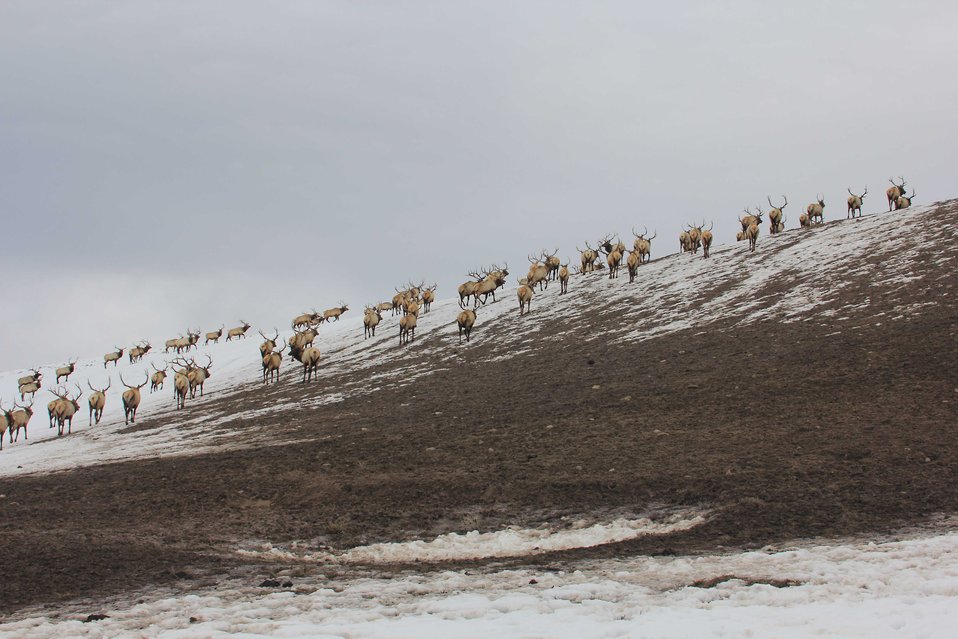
Moving to Higher Ground

When spring-like conditions move in and seasonal green-up begins, wintering elk move to higher ground in search of new growth or residual forage from the previous growing season.

Credit: USFWS / Tony Hough, National Elk Refuge volunteer